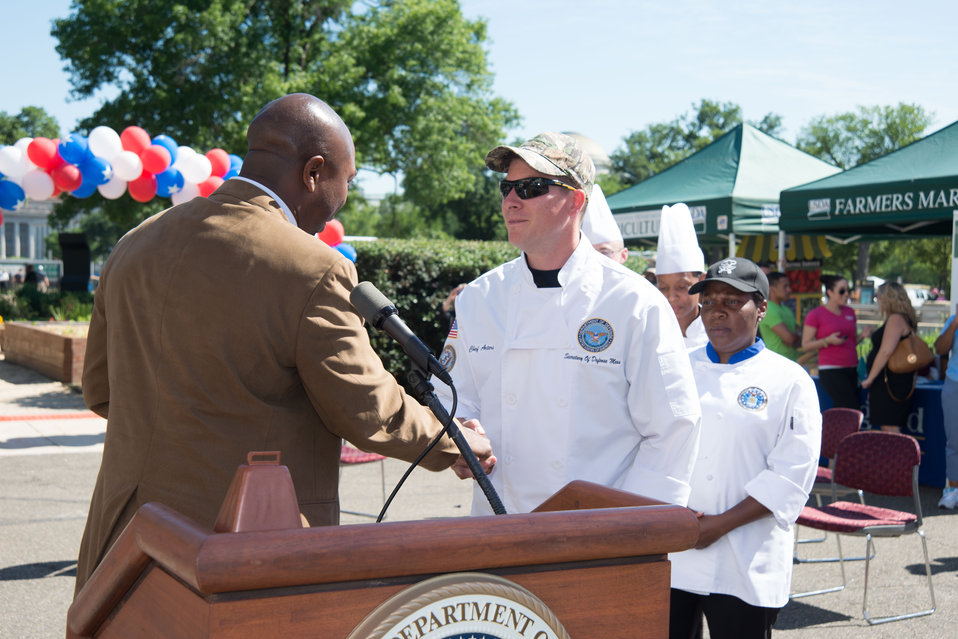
U.S. Navy Culinary Specialist First class (CS1) George Arters receives challenge coin from U.S. Department of Agriculture (USDA) Farm and Foreign Agricultural Service (FAS) Deputy Under Secretary Karis T. Gutter at the opening USDA’s 2014 Farmers Market in the east parking lot of USDA in Washington, D.C. on Friday, Jun. 6, 2014.